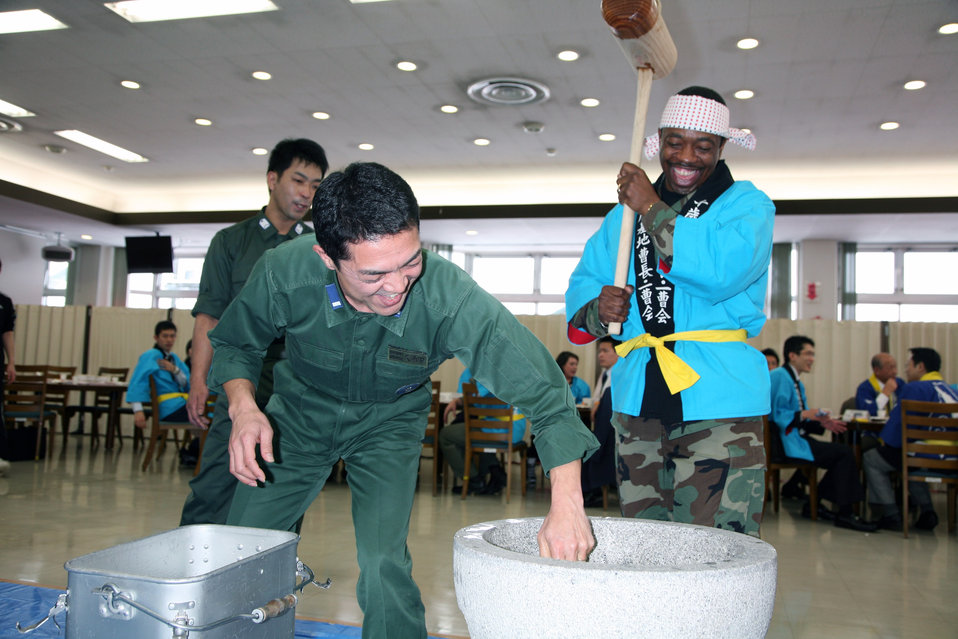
Kadena Airmen participate in Japanese cultural ceremony

Senior Master Sgt. Tony Mills takes a turn pounding rice during a traditional Japanese New Year Mochitsuki ceremony Dec. 12 at the Japan Air Self Defense Force's Chitose Air Base. Sergeant Mills is assigned to the 13th Air Force, Det. 1. He and about 70 Airmen from the 18th Wing participated in a bilateral training event with the JASDF's 2nd Air Wing as part of the Aviation Training Relocation program.